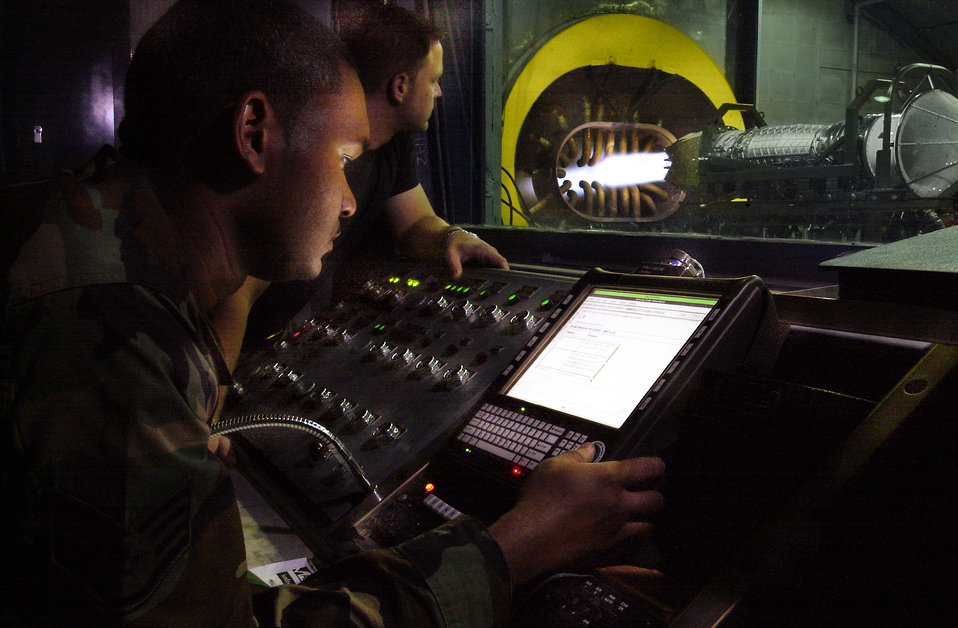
Maintaining the Raptor

LANGLEY AIR FORCE BASE, Va. -- Staff Sgts. Steven Gauche (left) and Ryan Ross observe a nozzle vector test of an F/A-22 Raptor engine July 14. Airmen with the 1st Component Maintenance Squadron here are going through classes and training to certify them on the new engine.